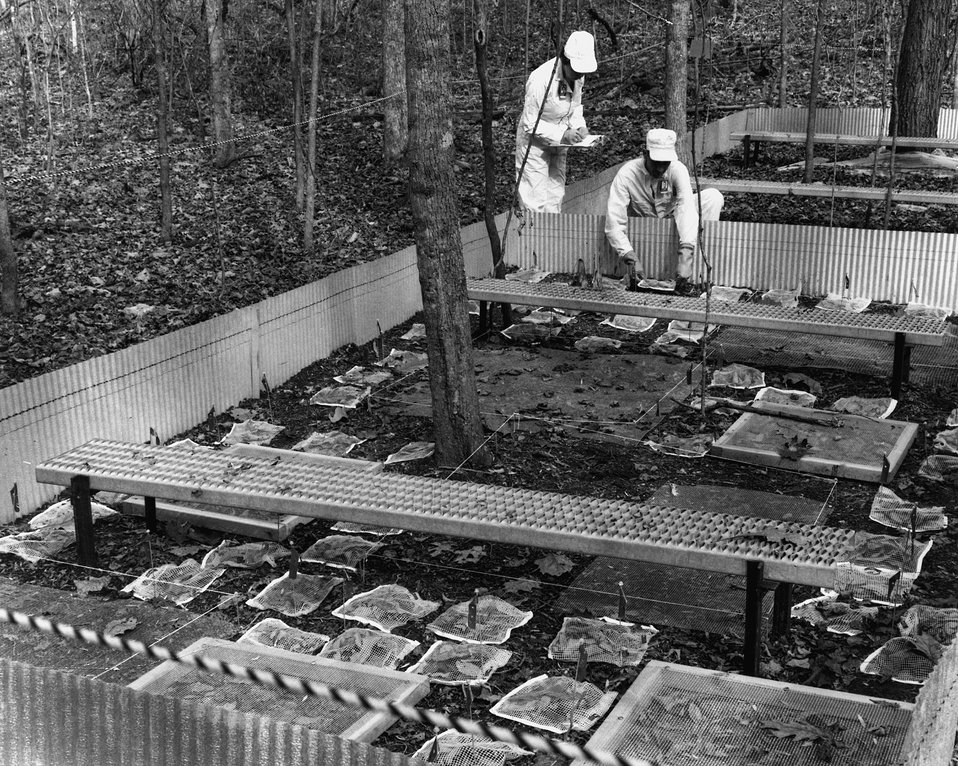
At the U.S. Atomic Energy Commission's Oak Ridge National Laboratory ecologists study the decomposition and release of nutrients (including radioisotopes) from plant parts in a forest. c. 1972